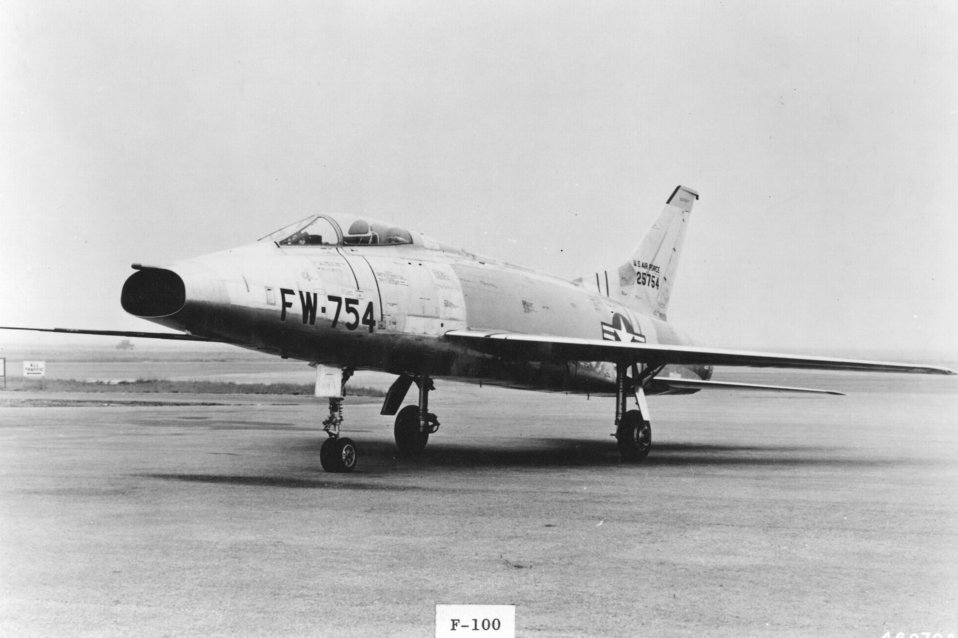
North American F-100

1950s -- North American F-100